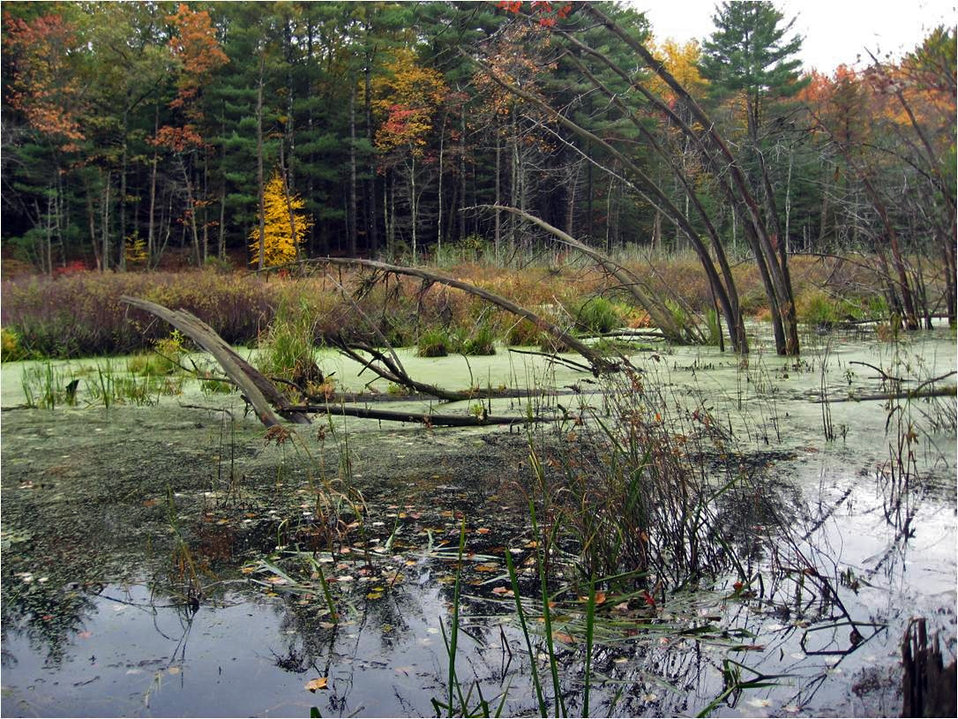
Wetlands

Oxbow National Wildlife Refuge, MA.